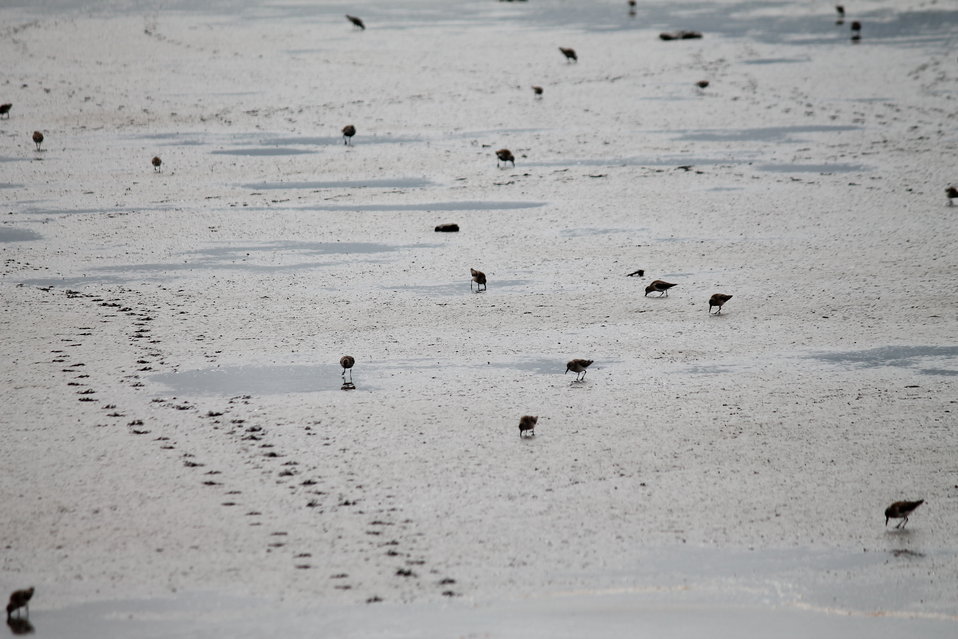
Shorebirds

Large exposed mudflats are common in the coastal zone of Yukon Delta NWR. Some ponds along the coast are tidally influenced. At low tide the mudflats are exposed igniting a feeding frenzy among the shorebird species.

USFWS Yukon Delta NWR